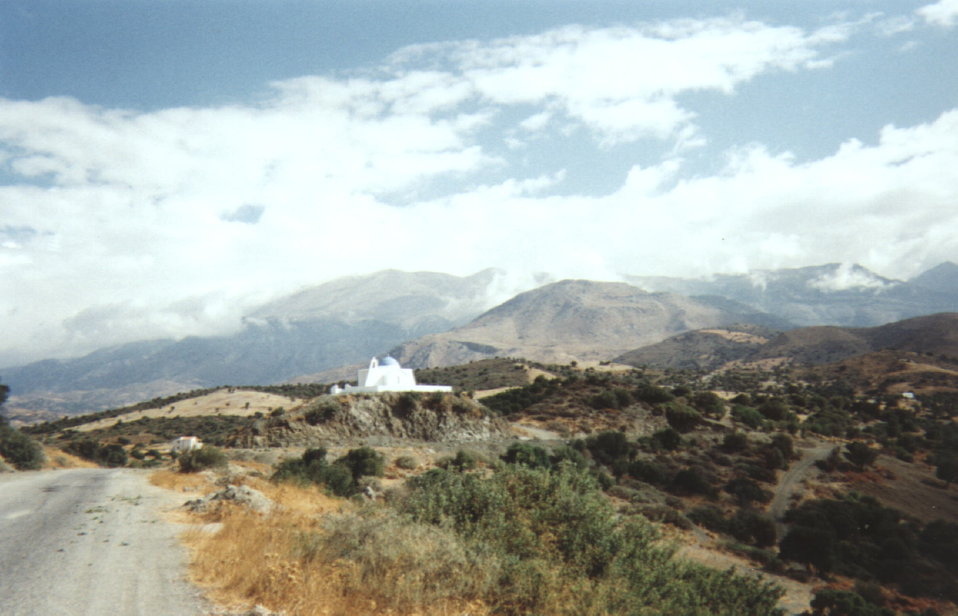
0411 Timpaki2